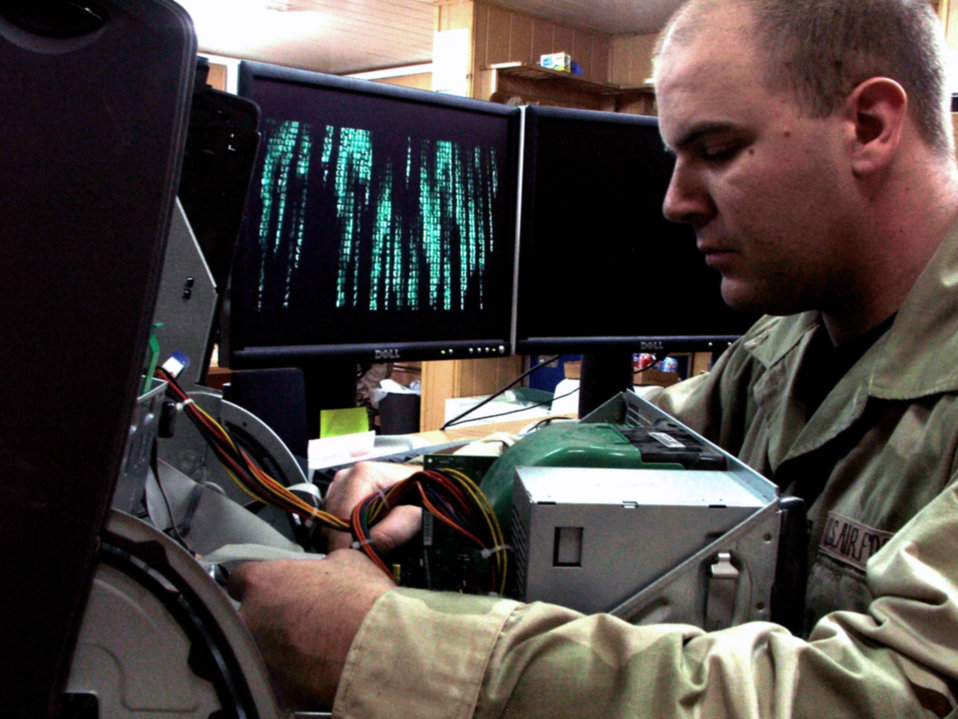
Combat communicators provide more than 'terabyte' of support

KARSHI-KHANABAD AIR BASE, Uzbekistan -- Staff Sgt. Brandon Miranda repairs a computer here March 15. He is a communications-computer systems operations journeyman assigned to the 416th Expeditionary Mission Support Squadron communications flight and is deployed from Grand Forks Air Force Base, N.D.